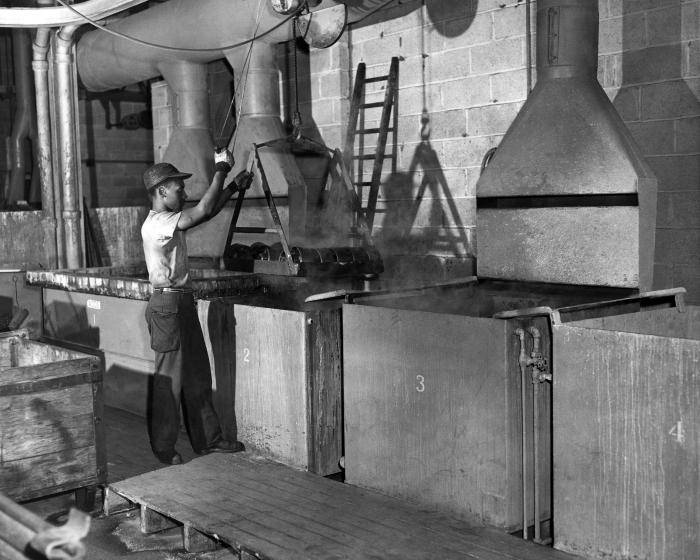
This historic image, provided by the Center for Disease Control's (CDC), National Institute for Occupational Safety and Health (NIOSH), depicted a Yale Towne Mfg. Co. industrial plant worker hoisting parts out of a chemical vat, or he could have been lowering parts into the vat for processing. Note that he was not wearing goggles, or filtered breathing devices, nor was he wearing elbow-length gloves, which would have protected him from accidental spatterIn gaining a better understanding of workplace hazards, through hands-on and on-site information acquisition, protocol-formulating bodies such as NIOSH, are better able to create a safer workplace through substantiation of appropriate safety regulations.